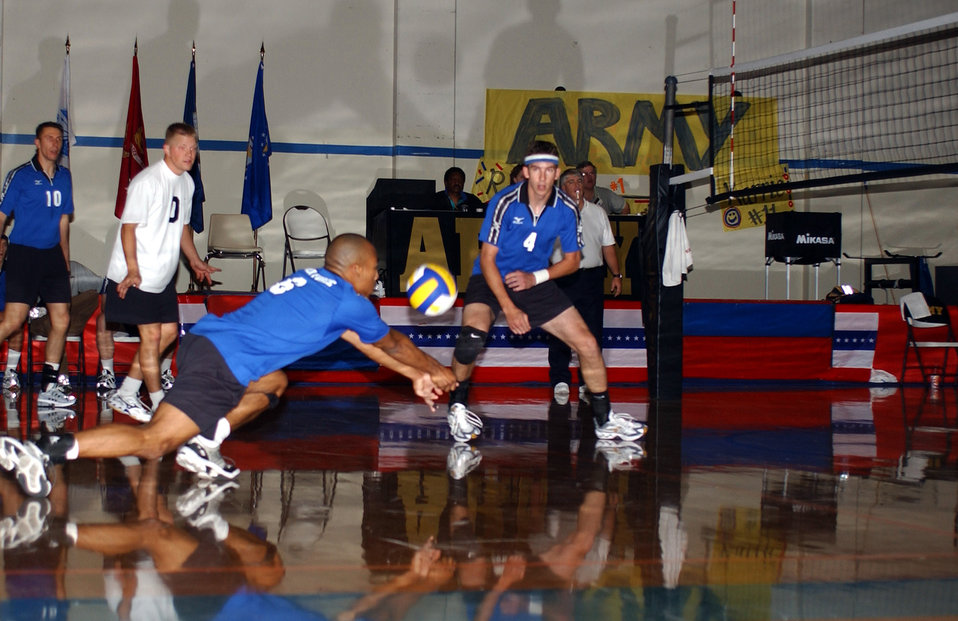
Digging for gold

FORT LEWIS, Wash. -- Chris Hucks dives to dig a ball for the Air Force team during the 2004 Armed Forces Volleyball tournament here May 26. The one-week tournament was to determine the best of the four services. Navy took home the gold, Army won Silver and Air Force won Bronze.